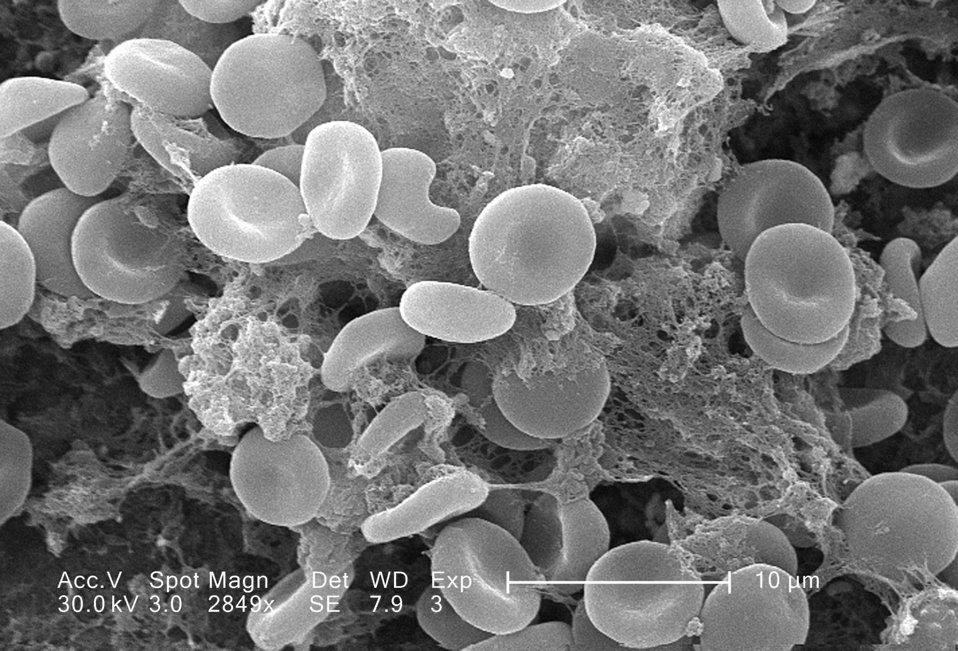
This scanning electron micrograph (SEM) depicted a number of red blood cells found enmeshed in a fibrinous matrix on the luminal surface of an indwelling vascular catheter; Magnified 2849x. In this instance, the indwelling catheter was a tube that was left in place creating a patent portal directly into a blood vessel.